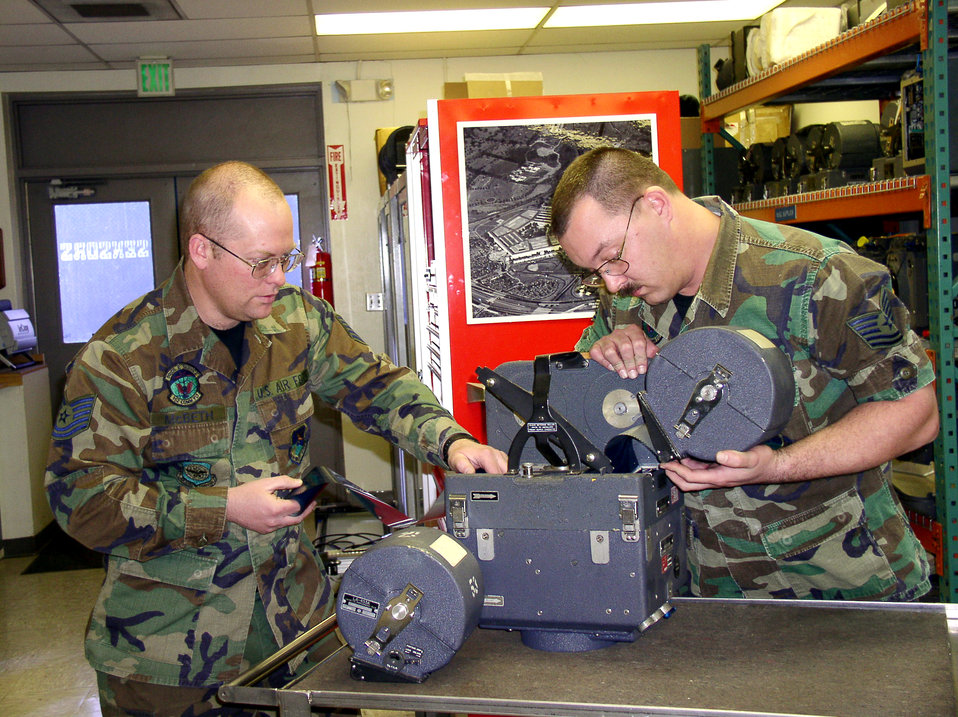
Camera repair

RENO, Nev. -- Tech. Sgts. Brian McBeth (left) and Brian Guettler repair a KS-87B film camera in the avionics shop at the Nevada Air National Guard Base here. The camera is used in counterdrug aerial reconnaissance operations. The two sergeants are the last of the KS-87B film camera repairmen in the military.